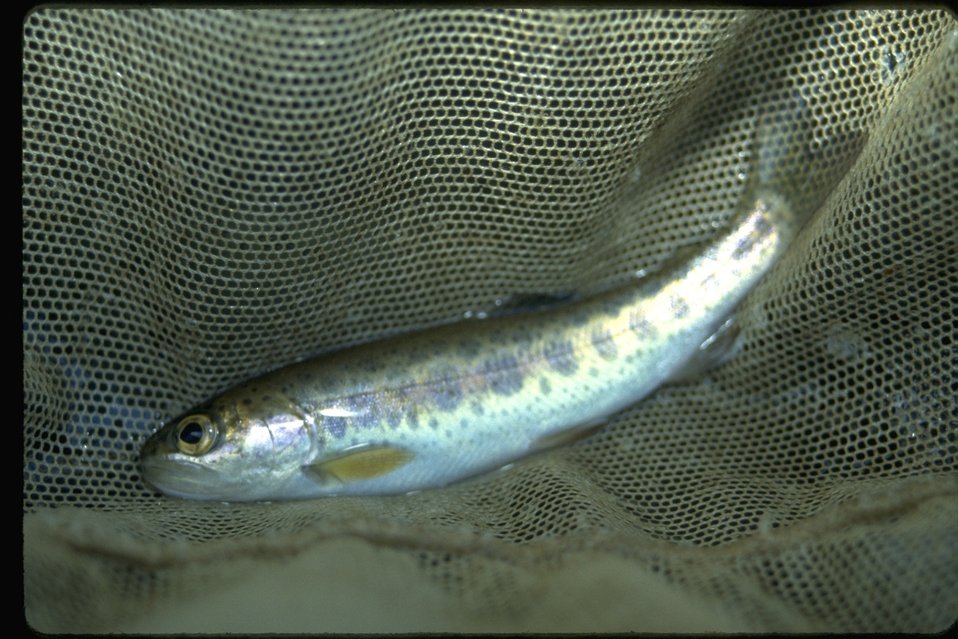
Macro shot of rainbow trout.